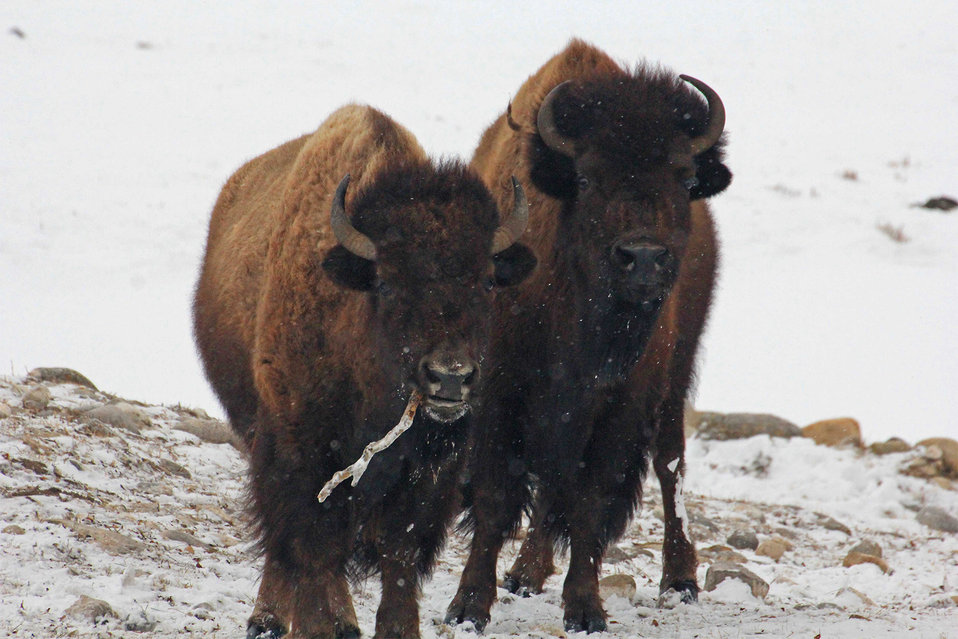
Toothpick, Bison Style

A branch protrudes from the mouth of a bison on the National Elk Refuge. Perhaps the animal was in need of roughage?